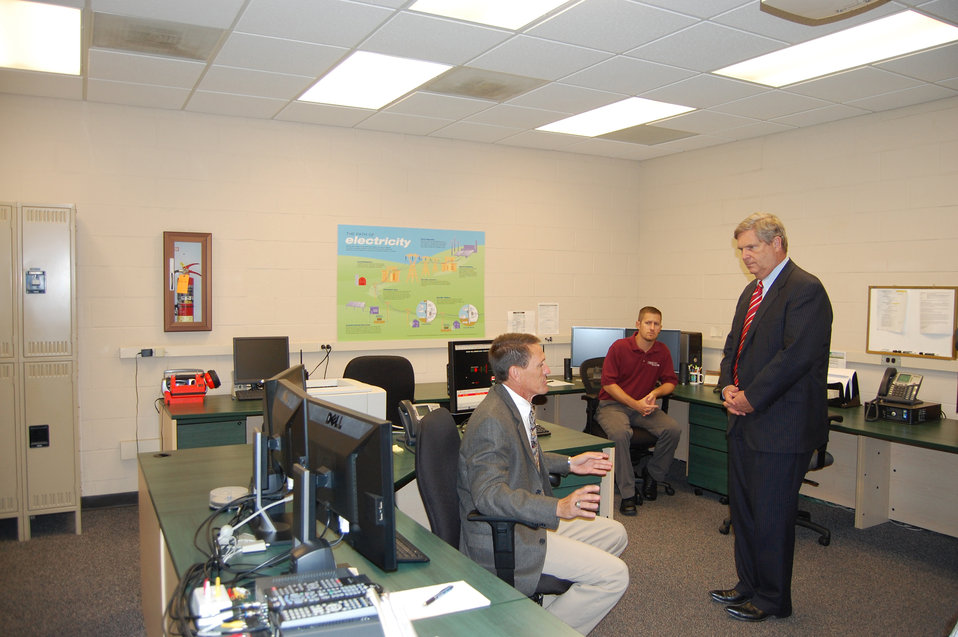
Piedmont Electric Membership Corporation (EMC) Manager of Engineering Robin Blanton explains the technology to monitor customer usage and outages to Agriculture Secretary Tom Vilsack while EMC lineman Jeff Young looks on at the Piedmont EMC in Hillsborough, NC on Friday, Sept. 7, 2012. Piedmont EMC received a guaranteed loan from the U.S. Department of Agriculture (USDA) to extend its system by 52 miles and to help provide service to about 1,000 new member consumers. The cooperative will also increase capacity for 100 current consumers and improve the reliability of about 40 miles of line.